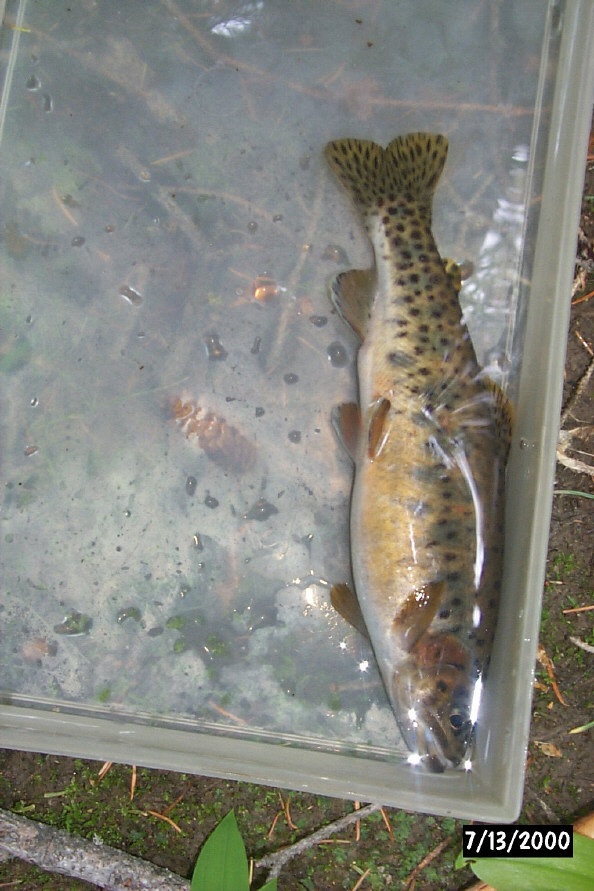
Cutthroat Salmon Field Office UCSC Upper Columbia Salmon Clearwater District